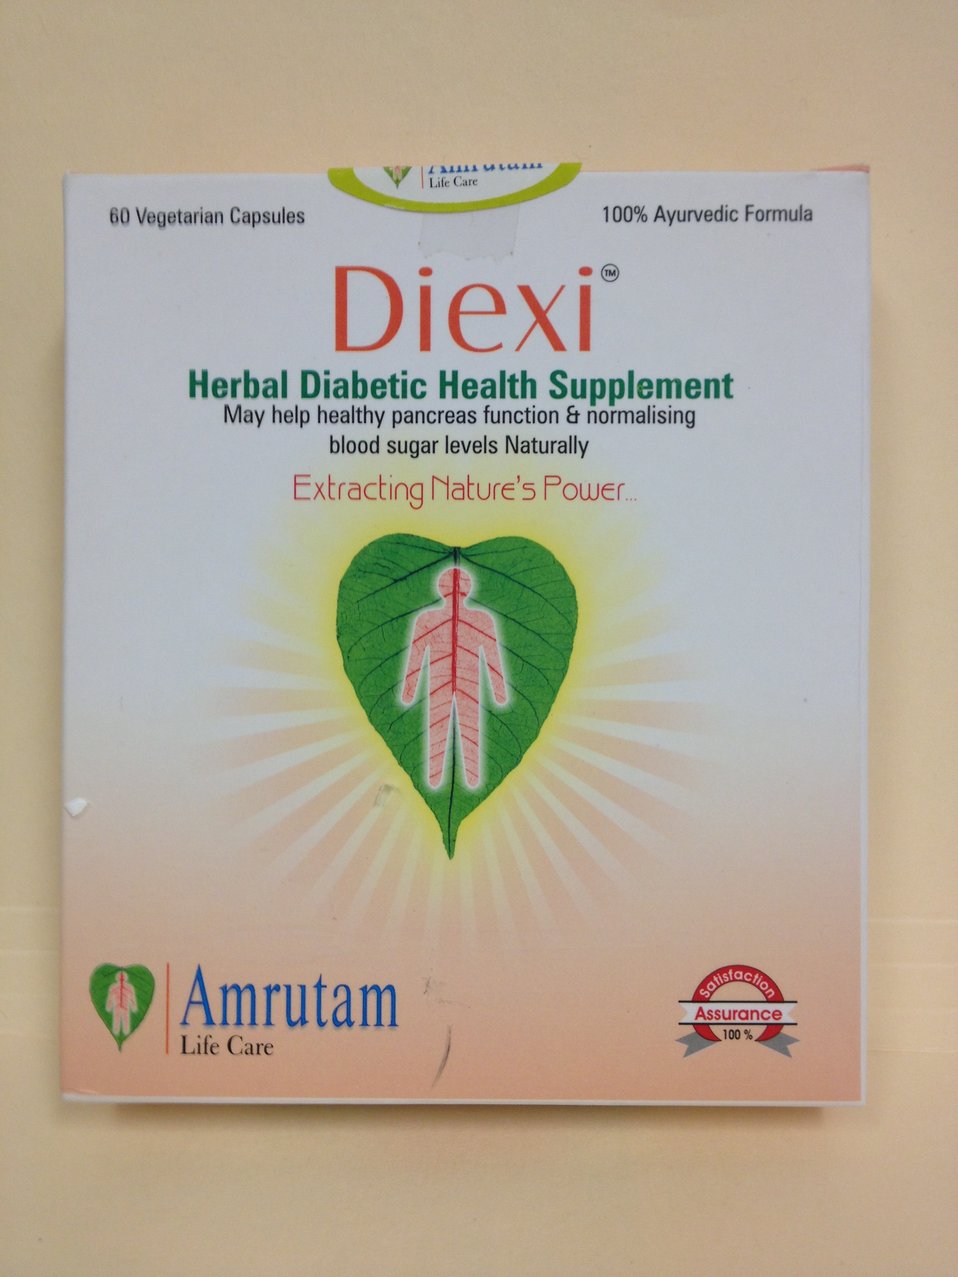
Illegally Sold Diabetes Treatments - Diexi

This product is illegally promoted as a natural, ayurvedic supplement, but was found to contain an undeclared active ingredient, metformin. FDA warns consumers to avoid unproven and potentially unsafe products sold as treatments for diabetes.